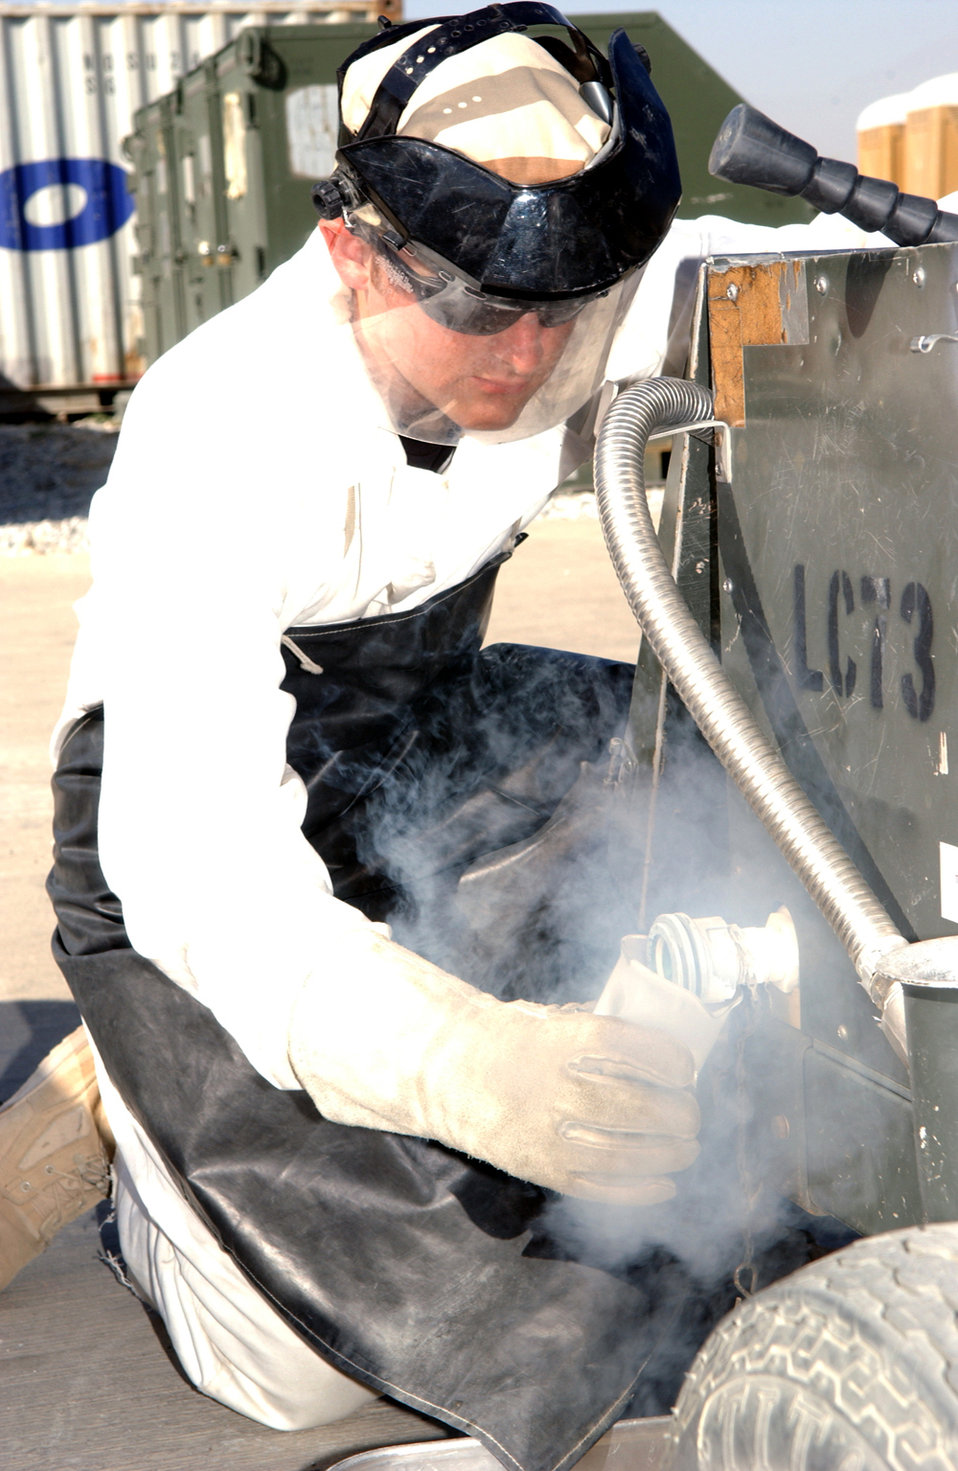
Keeping aircraft fueled to fight

BAGRAM AIR BASE, Afghanistan -- Senior Airman Matthew Geatches takes a sample of liquid oxygen after refilling a service cart. He wears protective gear because liquid oxygen is extremely volatile and cold. Airman Geatches is a 455th Expeditionary Logistics Readiness Squadron liquid oxygen technician.